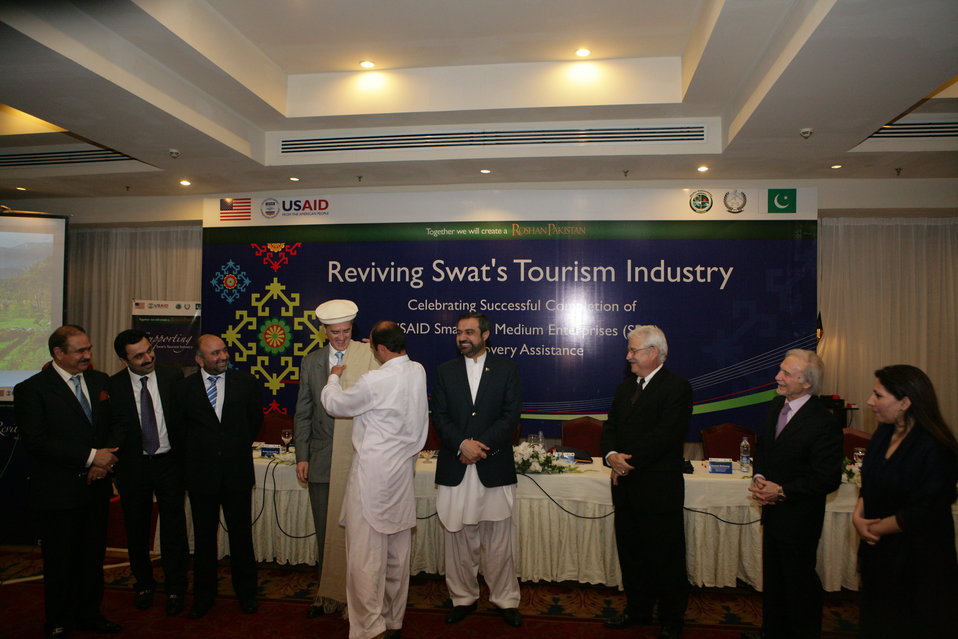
Graduation event of USAID Firms Project's Malakand Small and Medium Enterprises (SME) Recovery Assistance Program

Hotel and trout fish farm owners from Swat presented intricately woven, exquisite Swati shawl and cap to U.S. Ambassador Richard Olson